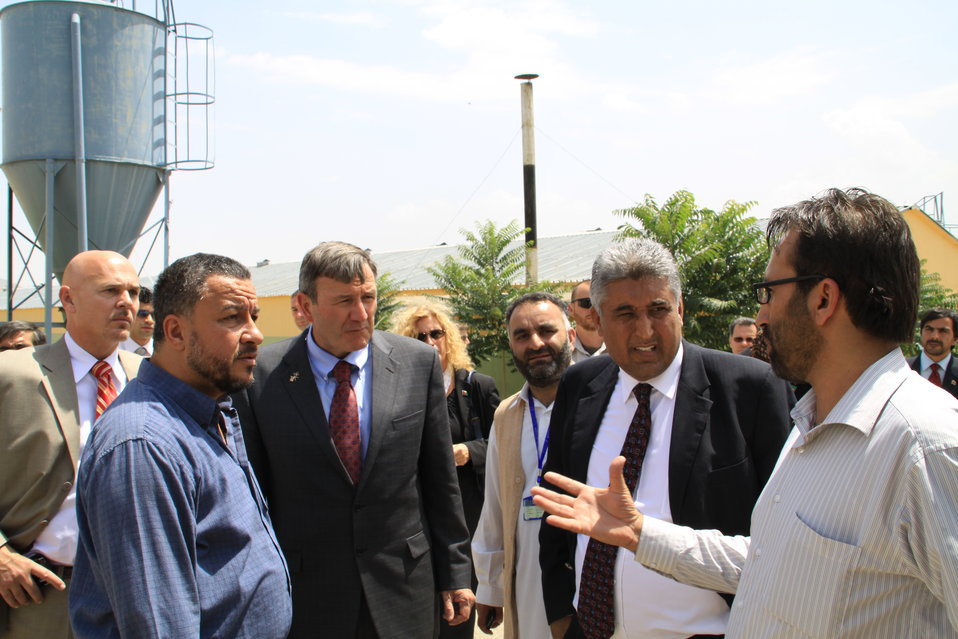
Badam Bagh Farm